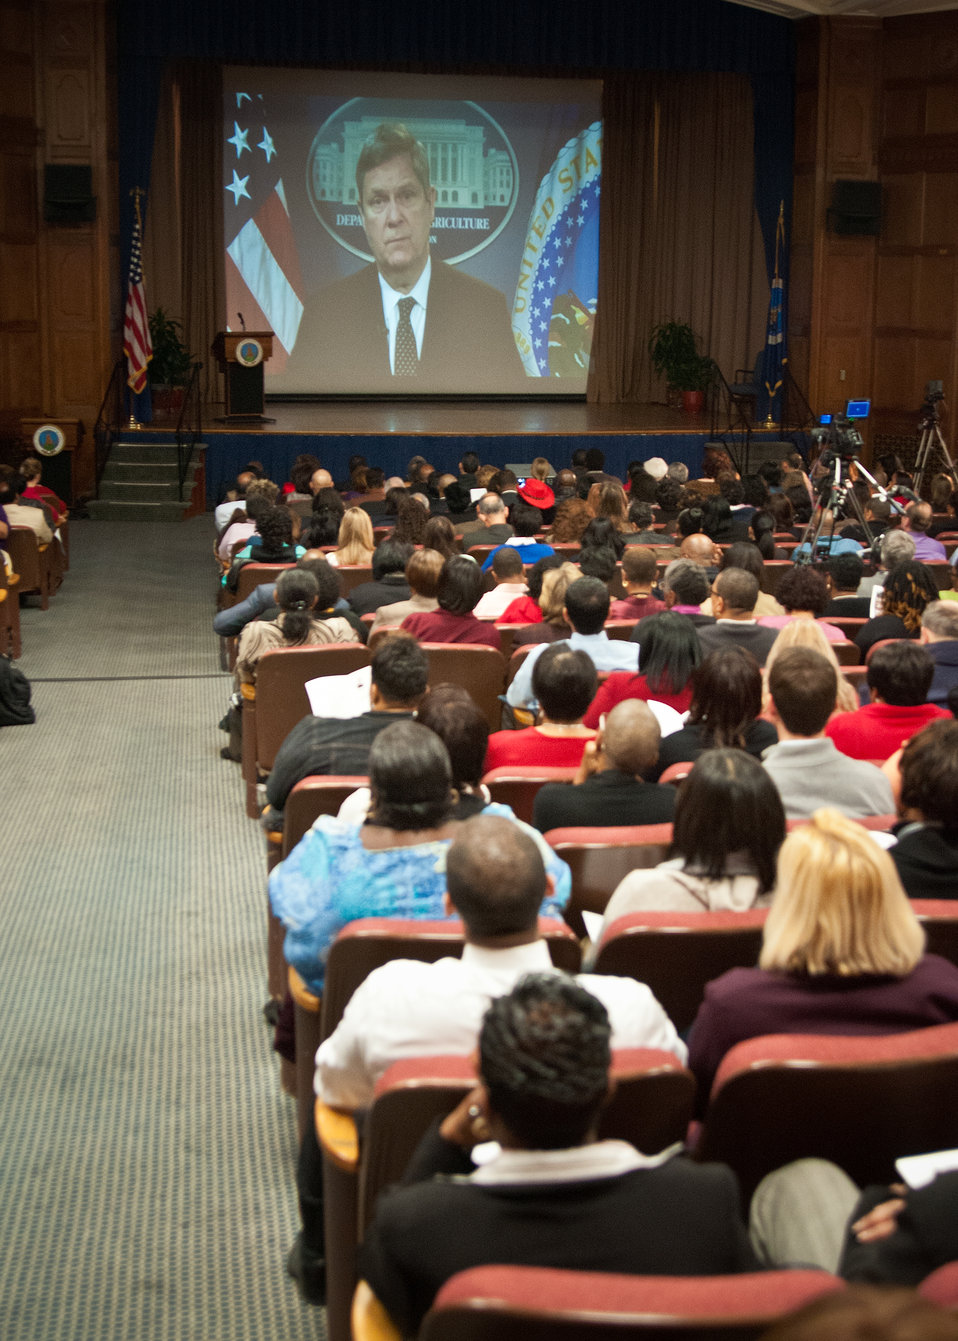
Agriculture Secretary Tom Vilsack addressed the audience via a video at the United States Department of Agriculture Black History Month celebration “Black Women in American Culture and History” in Washington, D.C. on Thursday, February 16, 2012. Secretary Vilsack spoke of the strength and contributions of Black Women to the Department of Agriculture and to the culture and history of the United States.